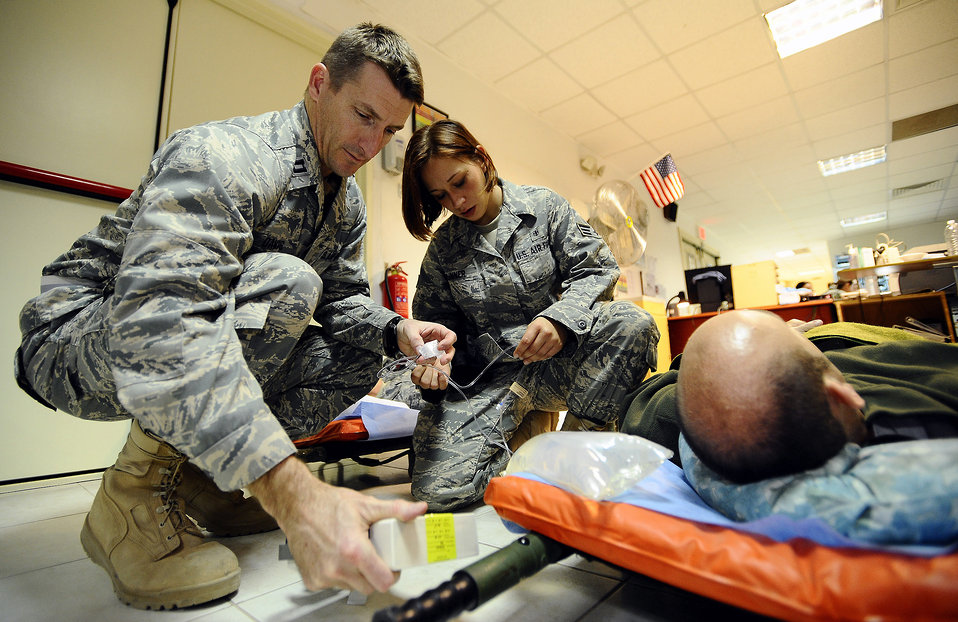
Warrior care

Capt. John Davis troubleshoots an intravenous pump as Senior Airman Samantha Brunner inspects the IV pump's port for any kind of blockage Nov. 27 at the Contingency Aeromedical Staging Facility on Joint Base Balad, Iraq. Both Airmen were preparing patients for an aeromedical evacuation flight. Airman Brunner, an aerospace medical service journeyman with the 332nd Expeditionary Aerospace Medical Squadron and native of Washington, Pa., is deployed from the 911th Airlift Wing at Pittsburgh International Airport Air Reserve Station, Pa. Captain Davis, a clinical nurse with the 332nd Expeditionary Aerospace Medical Squadron and native of Satellite Beach, Fla., is deployed from Patrick Air Force Base, Fla.